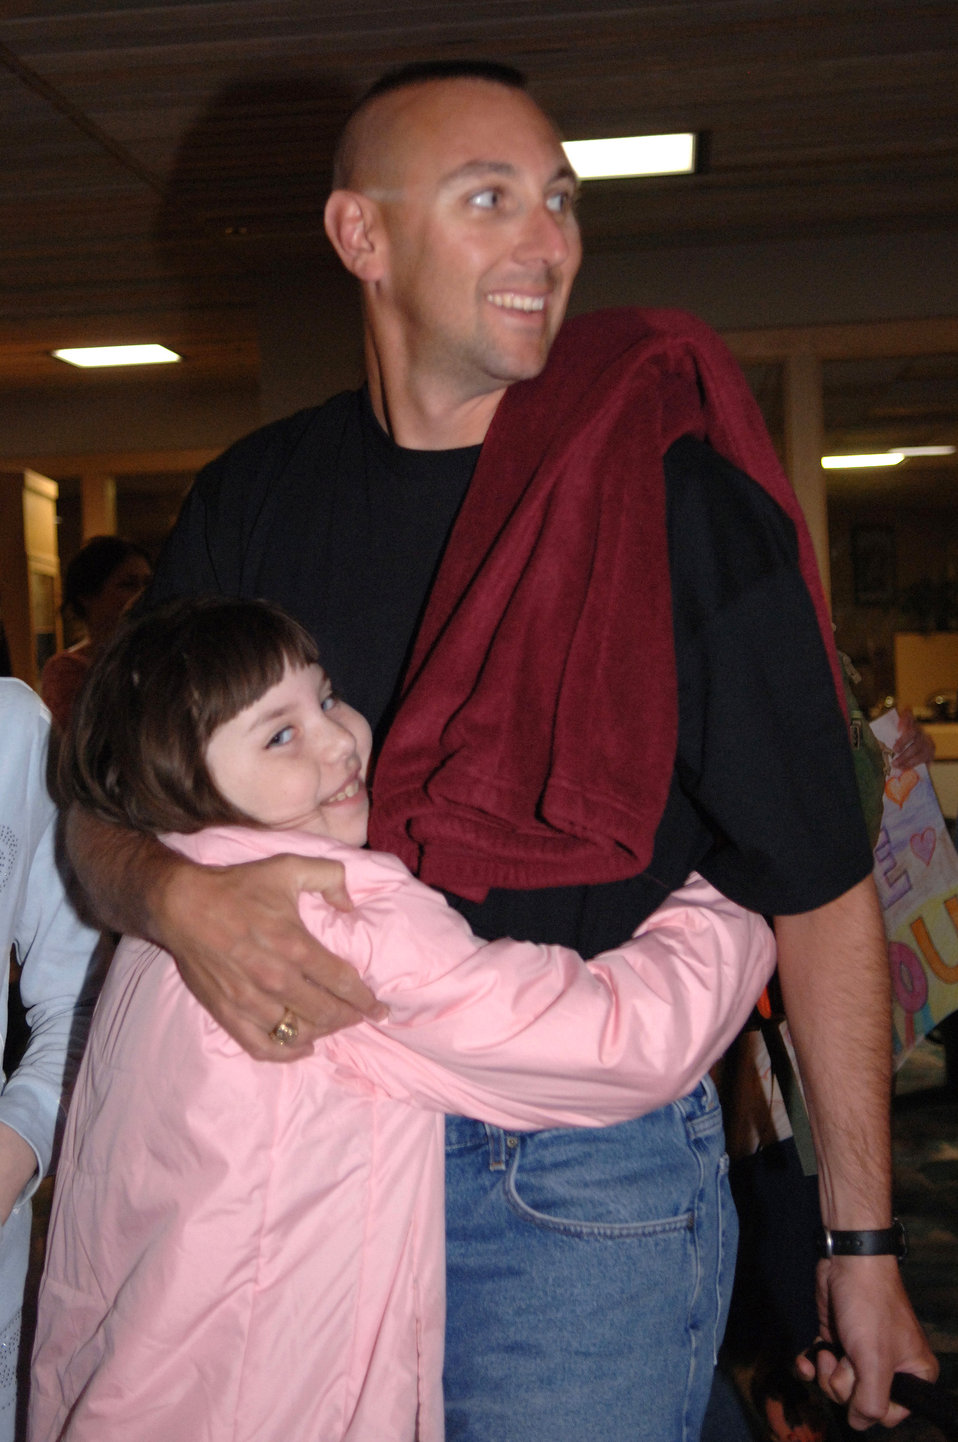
Welcome home to South Dakota

Tech. Sgt. Dwan Allen is greeted home by his daughter, Jennifer, at Rapid City Regional Airport March 21. Sergeant Shatek, assigned to the 28th Security Forces Squadron at Ellsworth Air Force Base, S.D., returned from a deployment to Southwest Asia in support of operations Iraqi Freedom and Enduring Freedom.